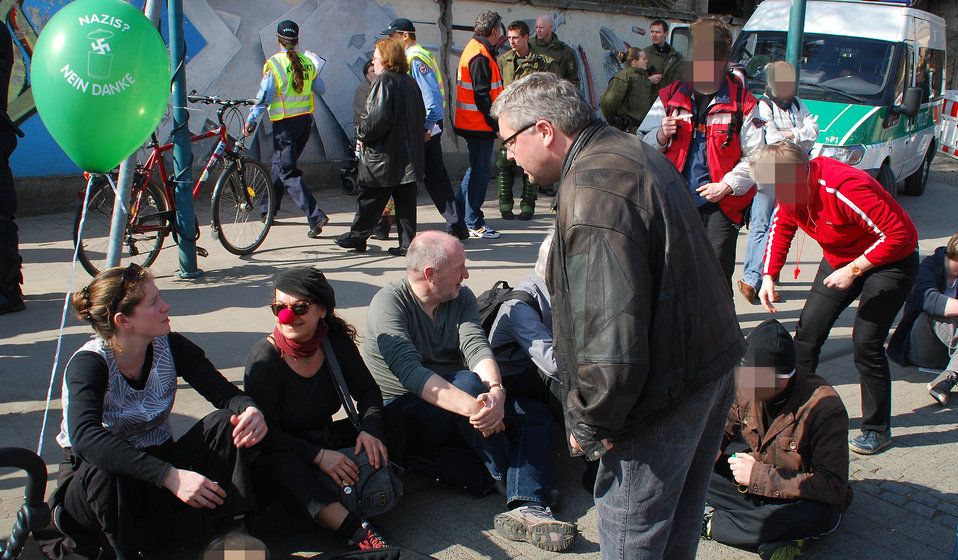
Proteste gegen den Nazi-Aufmarsch am 24.3.2012 in Frankfurt (Oder)